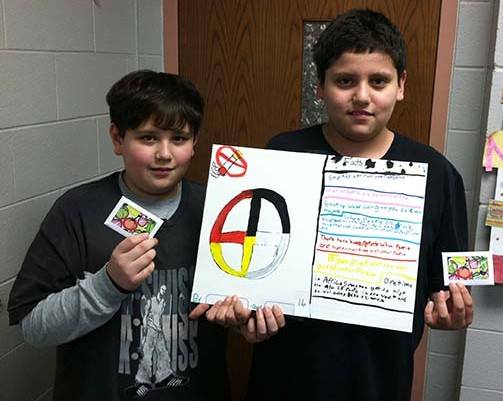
Shattering the Myths in Wisconsin

Cameron Vetterneck and Preston Valliere won for Poster with the Most Cultural Awareness during the LDF Minobimaadiziiwin Coalition National Drug Facts Week Poster Contest Event. They work collaboratively to prevent and reduce substance abuse, especially among youth, by promoting healthy lifestyles in Lac du Flambeau, Wisconsin.